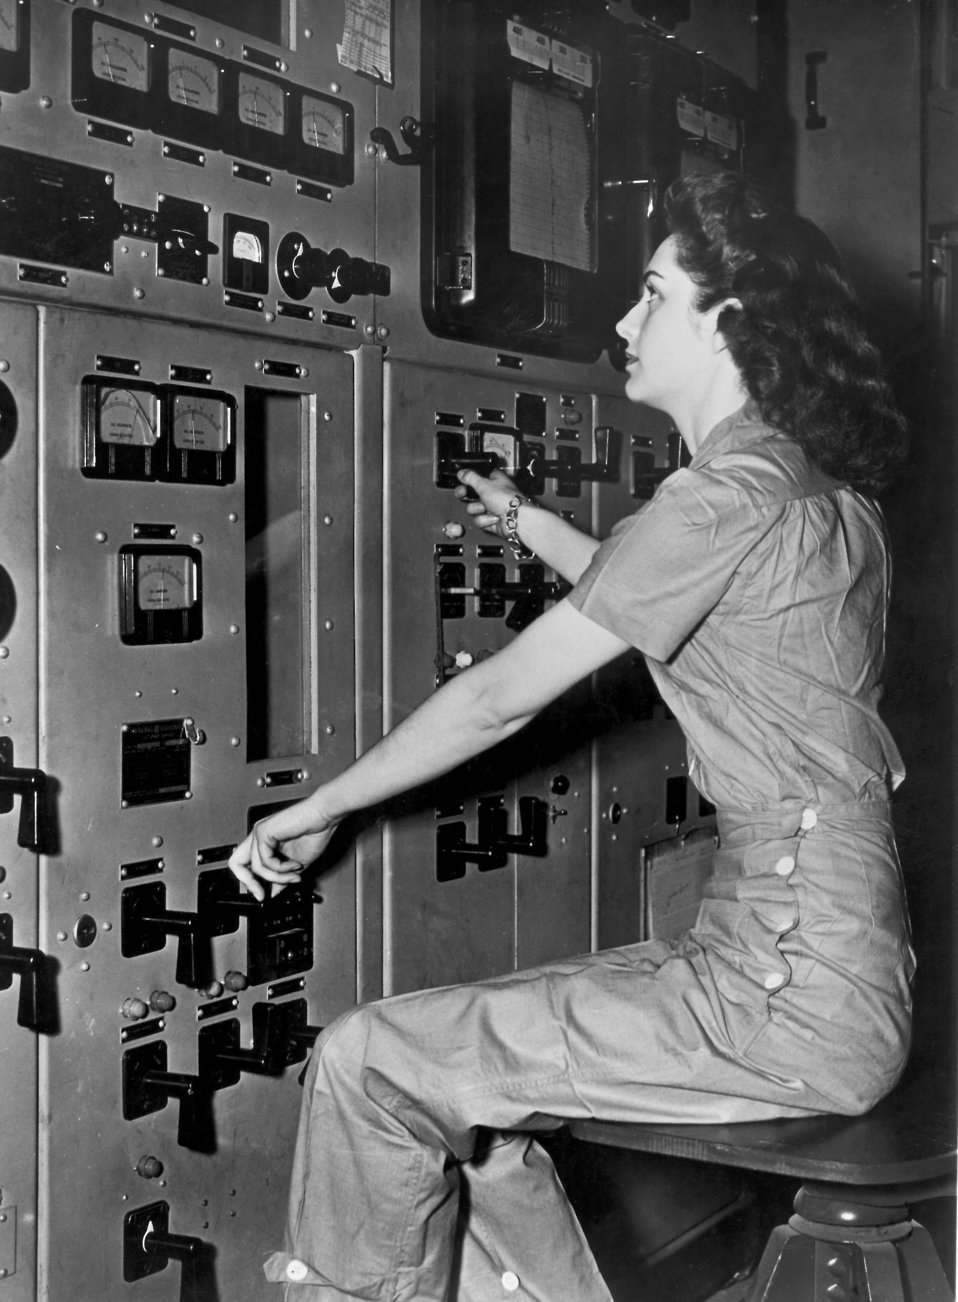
Control Panel Operator, Y-12 Plant Oak Ridge

med-228 DOE photo by Ed Westcott Oak Ridge Tennessee 1949